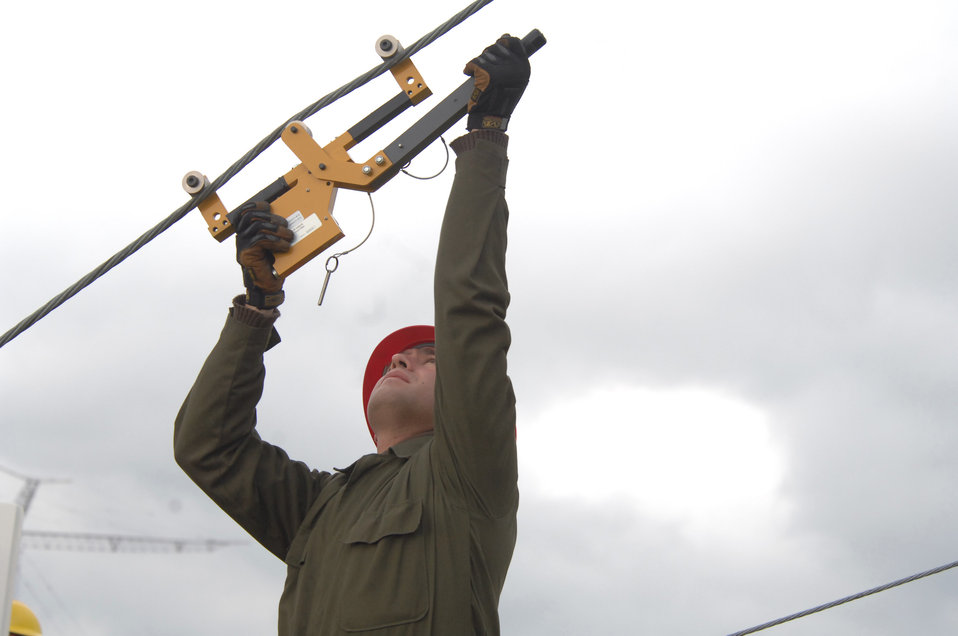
Airmen ensure communications capability for joint, coalition success

Staff Sgt. Carlos Salinas measures the pressure on a guy wire that holds tension through tie-down points connected to a radio tower Sept. 18, 2009, at Royal Air Force Barford, England. Sergeant Salinas is a member of the 1st Communications Maintenance Squadron cable and antenna theater maintenance team.